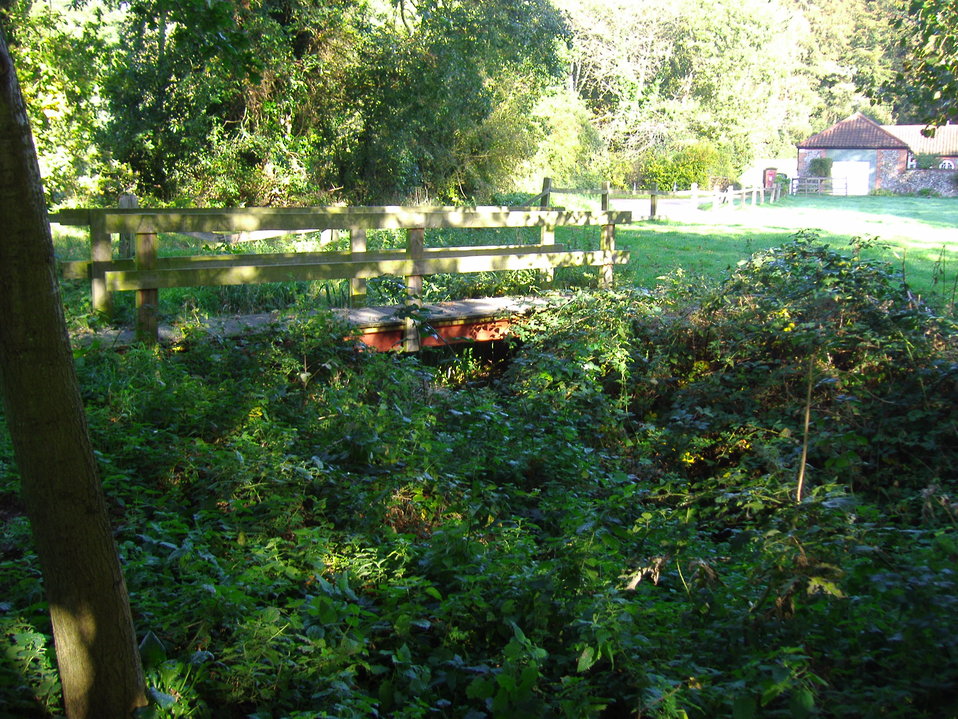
A Digital Photograph of the River Mun at Frogshall Taken on the 5th October 2007